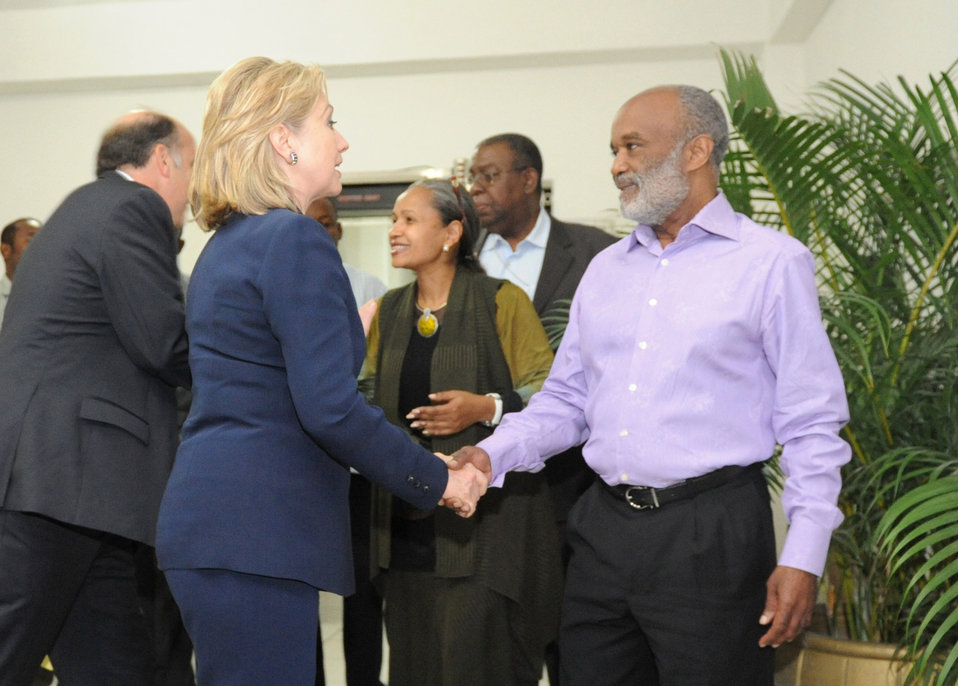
Secretary Clinton Says Goodbye to Haitian President Preval

U.S. Secretary of State Hillary Clinton says goodbye to Haitian President Rene Preval after their meeting in Port-au-Prince, Haiti, on January 30, 2011.